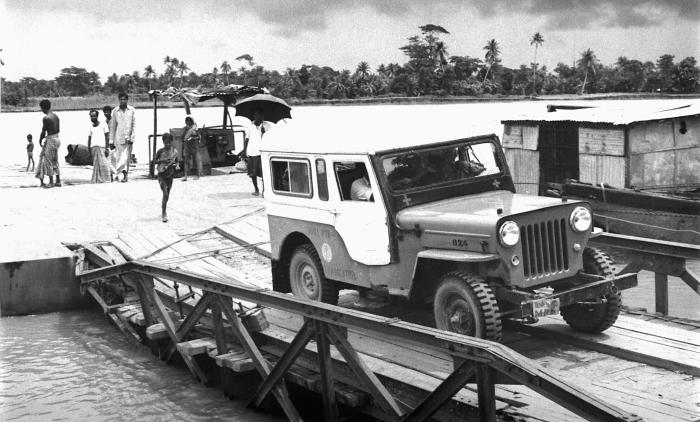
This photograph was captured by Pierre Claquin, M.D., B.A.C., who at the time was a member of the World Health Organization's Smallpox Eradication Program. It was provided by former E.I.S. officer, Stanley O. Foster M.D., M.P.H., was one of a series entitled 'The Story of One Smallpox Jeep', which depicted the travails faced by the jeep, and its occupants of public health practitioners, as they road through the Bangladesh countryside in an attempt to eradicate smallpox from the country. This Mahendra Jeep was being ferried across a river in order to continue its rural countryside journey educating residents about smallpox, its signs and symptoms. At the time of Smallpox Eradication, 72-76 ferries were used to cross the rivers. This was the Daukandi ferry, which traveled from Dhaka to Comilla; a route now traversed by a bridge. Travel which used to take 12-24 hours, now can be done in 2-3 hours by bridge, many which were blown up during the country's 1971 war with India.